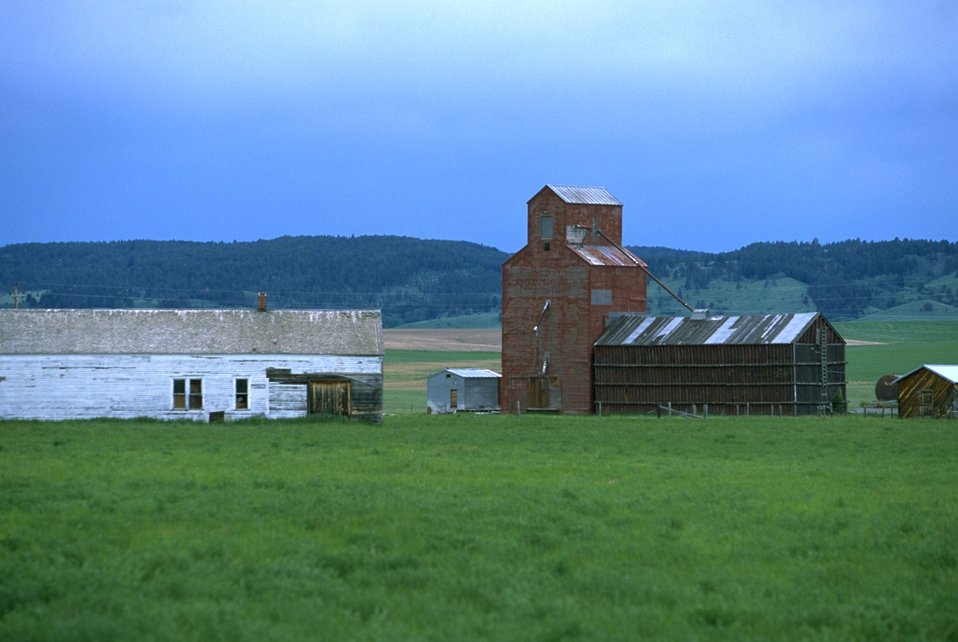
Old buildings in Hilger, Montana